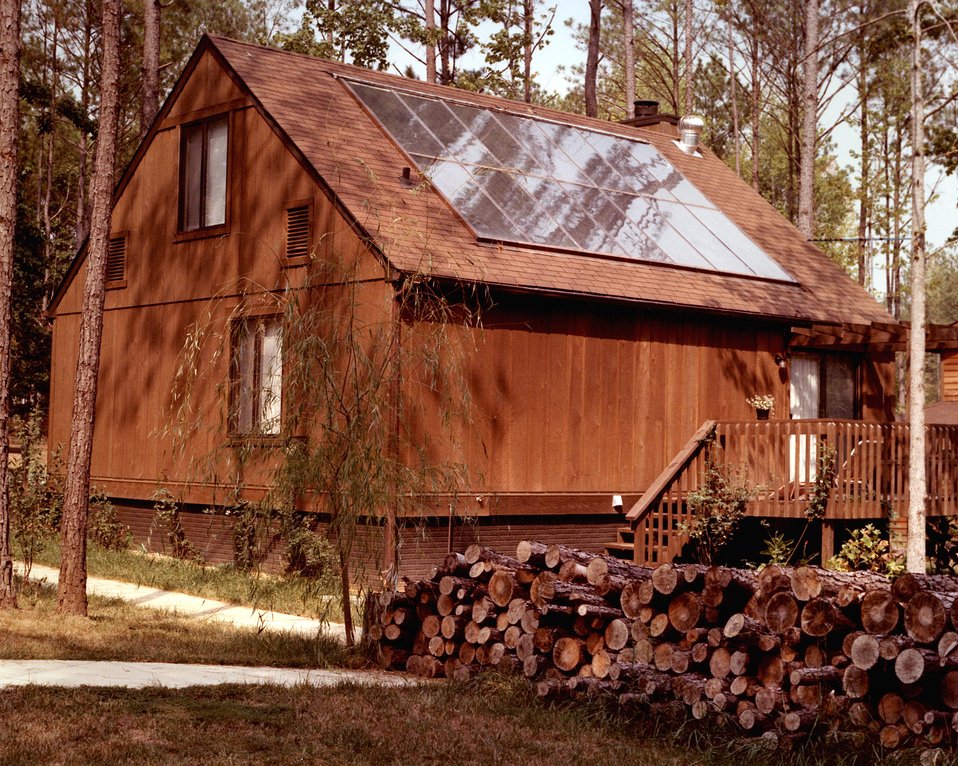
SOLAR POWER PROVIDES HOT WATER AND HEAT FOR THIS HOME IN SHENANDOAH, GEORGIA.

SUNLIGHT COLLECTORS ON THE ROOF OF THIS HOUSE HEAT WATER WHICH FLOWS INTO A 1,000 GALLON STORAGE TANK IN THE BASEMENT. A FAN-COIL SYSTEM IN THE DUCT WORK TRANSFERS HEAT FROM THE WATER INTO THE ROOMS. THE COSTS OF THE SOLAR EQUIPMENT IN THE 1,200 SQ. FT. HOME WERE COVERED BY A GRANT FROM THE DEPARTMENT OF HOUSING AND URBAN DEVELOPMENT SO THAT THE HOME COULD BE PRICED THE SAME AS SIMILAR MODELS.